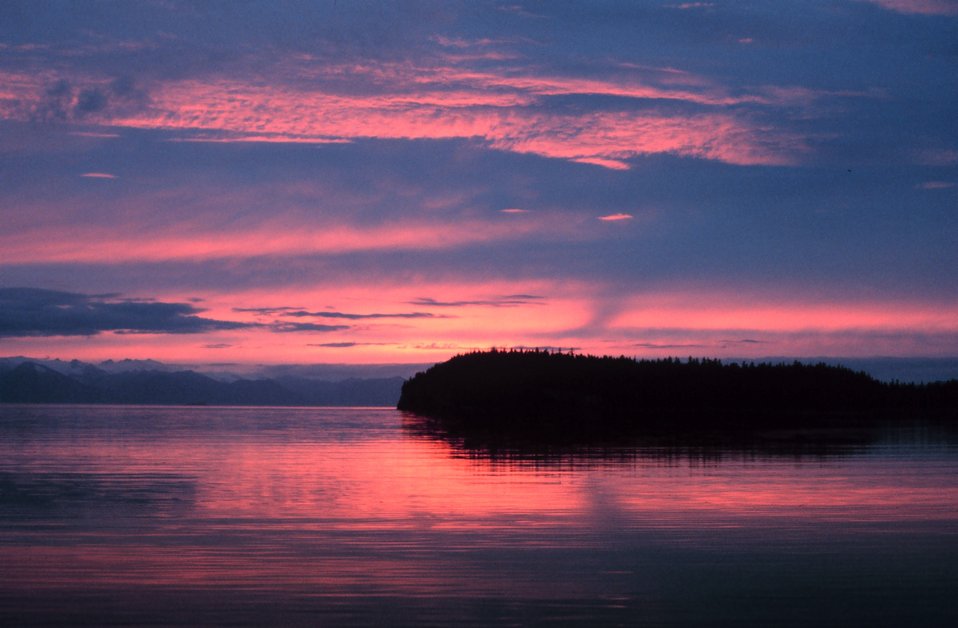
What a grand sunset! Mountains, an island and placid waters reflecting pink sky and clouds.